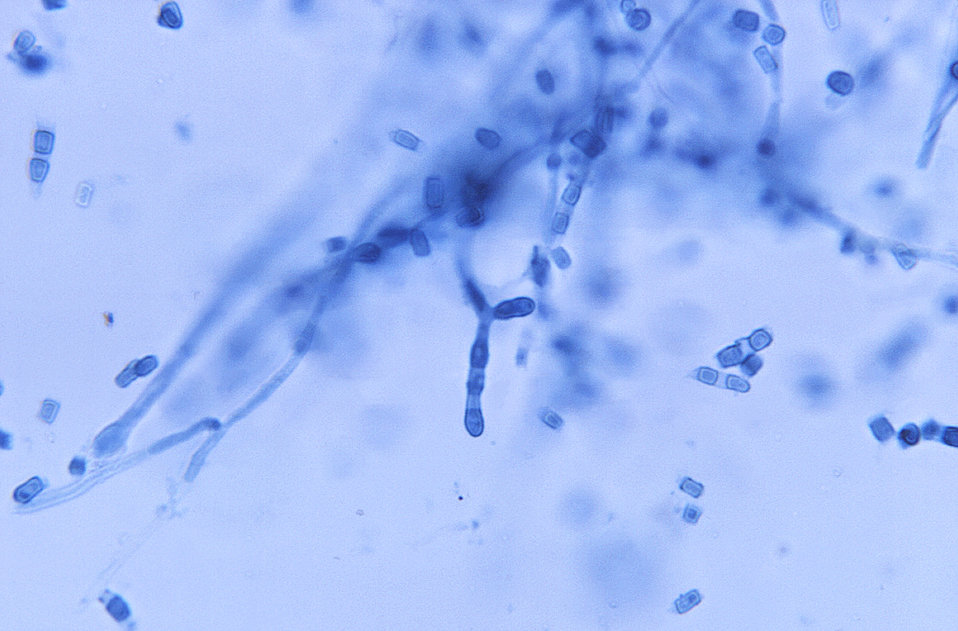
This photomicrograph revealed the presence of, thin, septate, hyaline or glass-like hyphae, from which numerous, thick-walled Coccidioides immitis arthroconidia have sprouted. The average arthrospore measures 3.0 x 4.5�m, and is barrel-shaped.